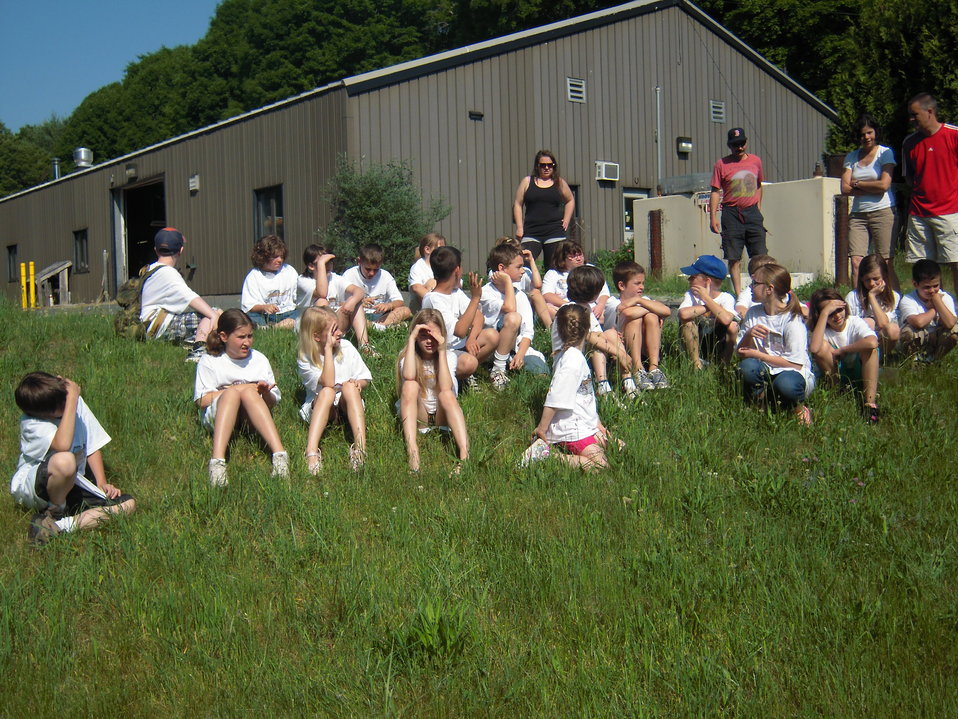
Meeting at the hatchery